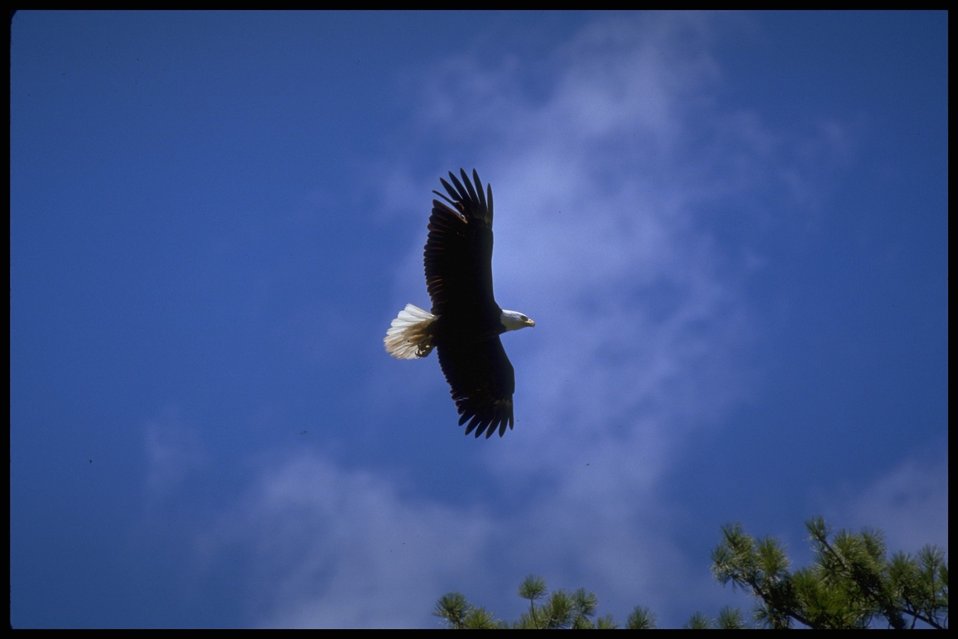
Far shot of Bald Eagle in flight. Lakeview District.